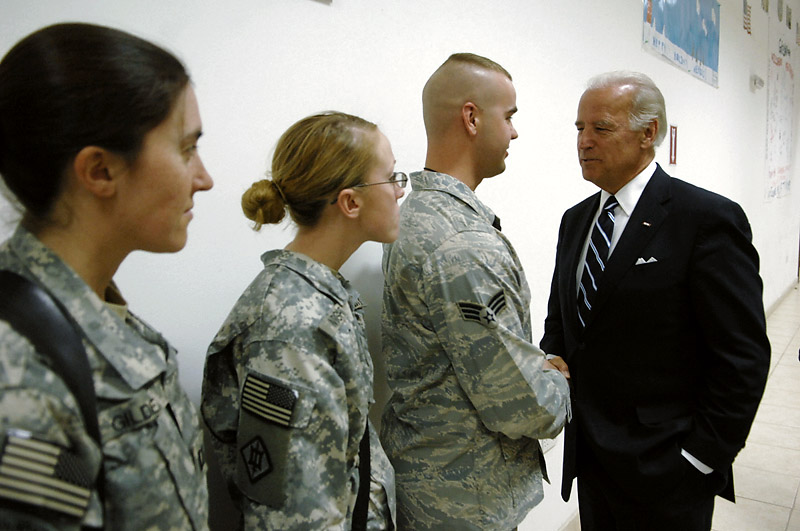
Kirkuk servicemembers host vice president-elect

Vice president-elect Joe Biden meets Soldiers and Senior Airman Steven Brown Jan. 13 at Kirkuk Air Base, Iraq. The Grand Rapids, Mich., native was among the Airmen here who the senator thanked for their service. Airman Brown is assigned to the 506th Expeditionary Security Forces Squadron and deployed from Eielson Air Force Base, Alaska.